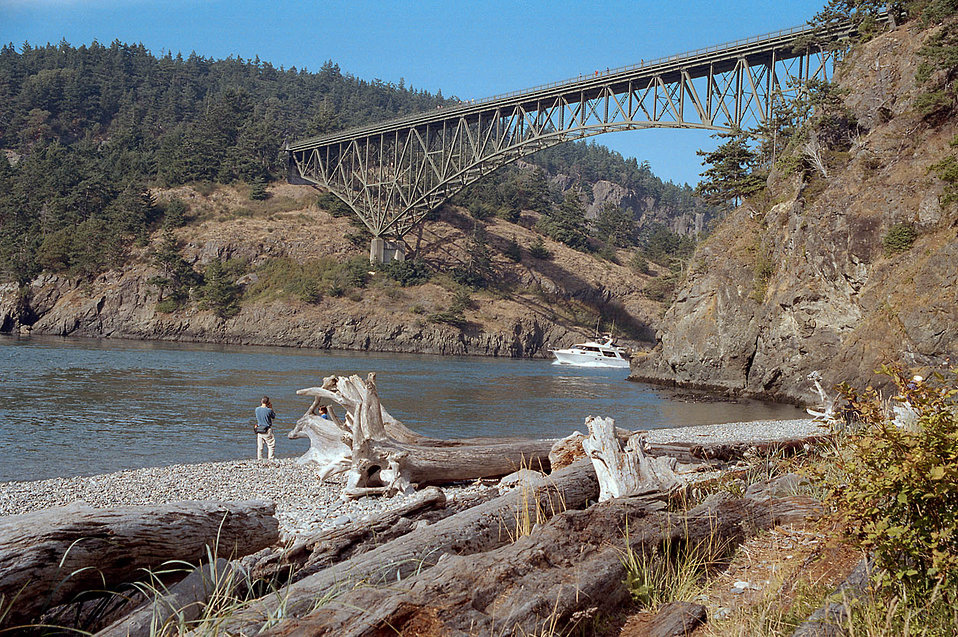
Deception Pass

A boat passes under the Deception Pass Bridge that connects Whidbey Island to Fidalgo Island in northern Puget Sound.

Learn more about the Puget Sound Ecosystem

Learn more about EPA